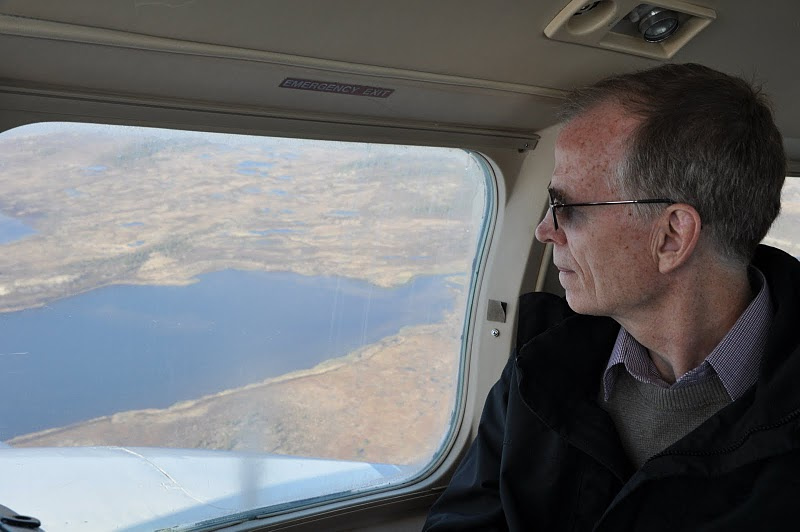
June, 2011 Exploring Bristol Bay by air

Rick Parkin and other senior EPA officials and scientists have visited Bristol Bay in Alaska to learn about the watershed and hear from local residents first hand about potential impacts from large-scale mining in the area.

Read about Rick's experience of Bristol Bay (PDF) (18 pp, 1.8MB)

Visit www.epa.gov/bristolbay for information about EPA's Bristol Bay Watershed Assessment.